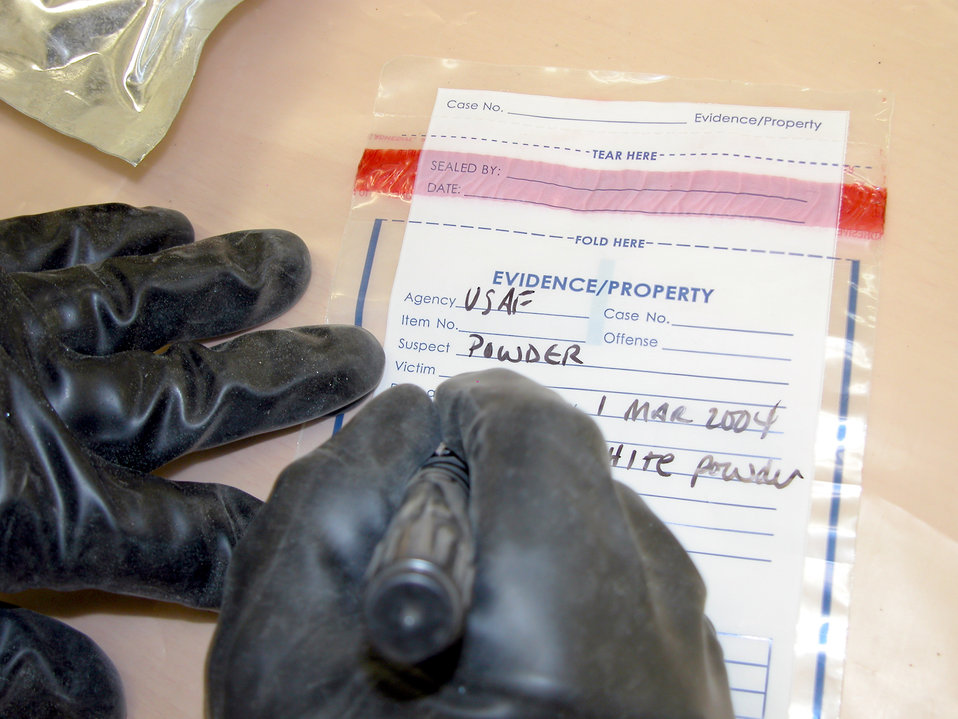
Checking for NBC

TALLIL AIR BASE, Iraq -- Staff Sgt. William Hall fills out an evidence bag during a biological identification training exercise here March 1. Sergeant Hall is a readiness journeyman deployed from Aviano Air Base, Italy, and one of seven Airmen here trained to detect nuclear, biological and chemical agents.